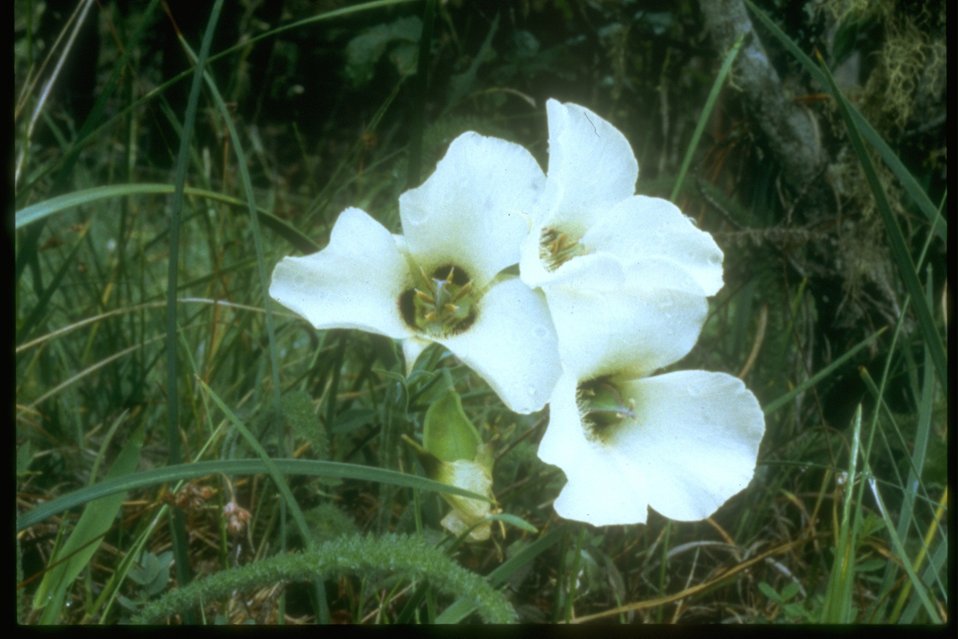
An Umpava Mariposa lily from the Liliaceae family.